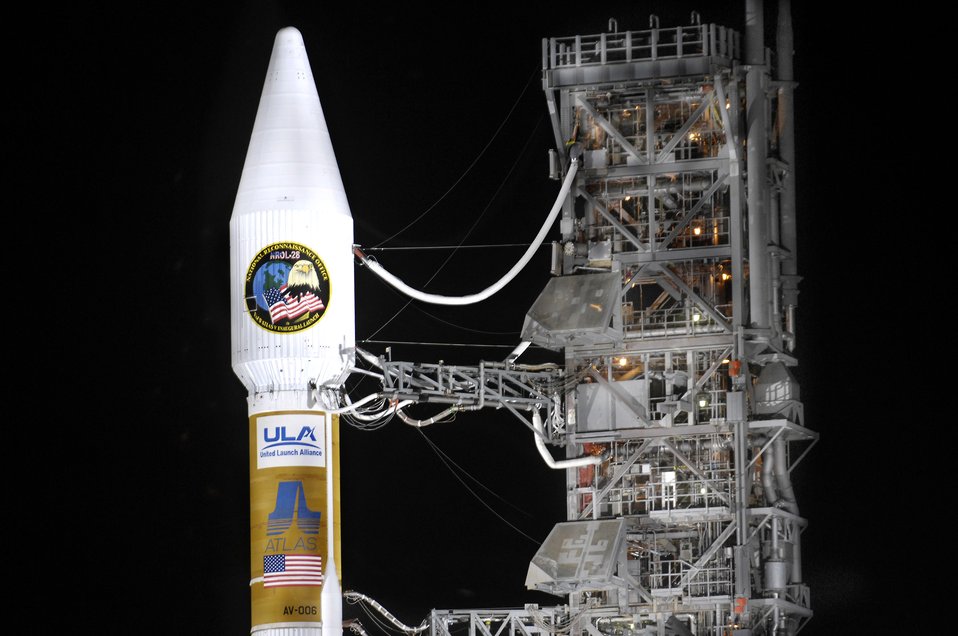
Vandenberg Airmen launch Atlas V rocket

An Atlas V stands on Space Launch Complex-3 during its mobile servicing tower rollback on March 12. The Atlas launched at 3:01 a.m. PDT March 13 at Vandenberg Air Force Base, Calif. It carried a National Reconnaissance Office payload and was the first Atlas V to launch from the West Coast.